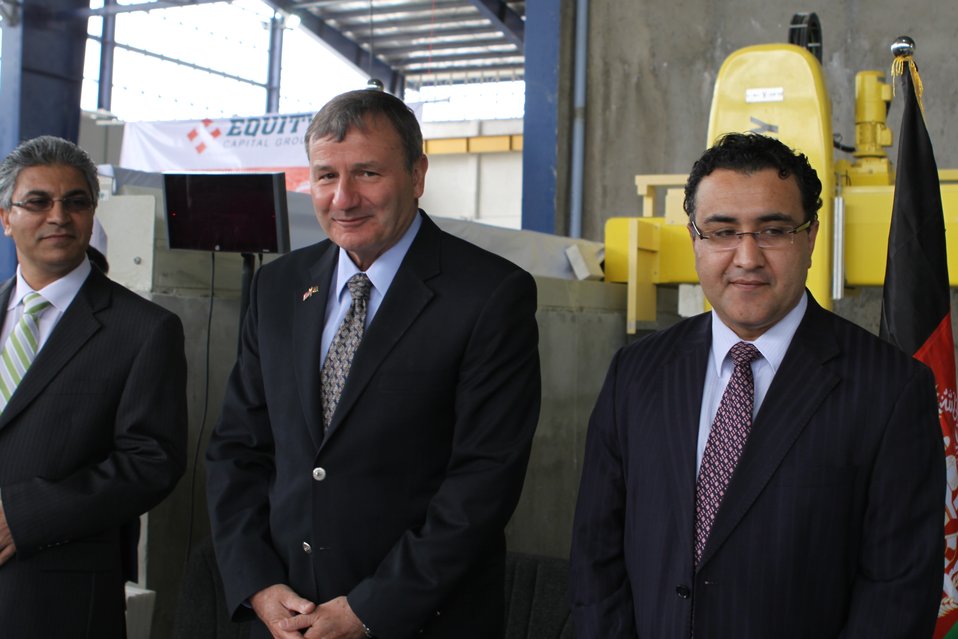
100525 Hirat Marble Conference 103